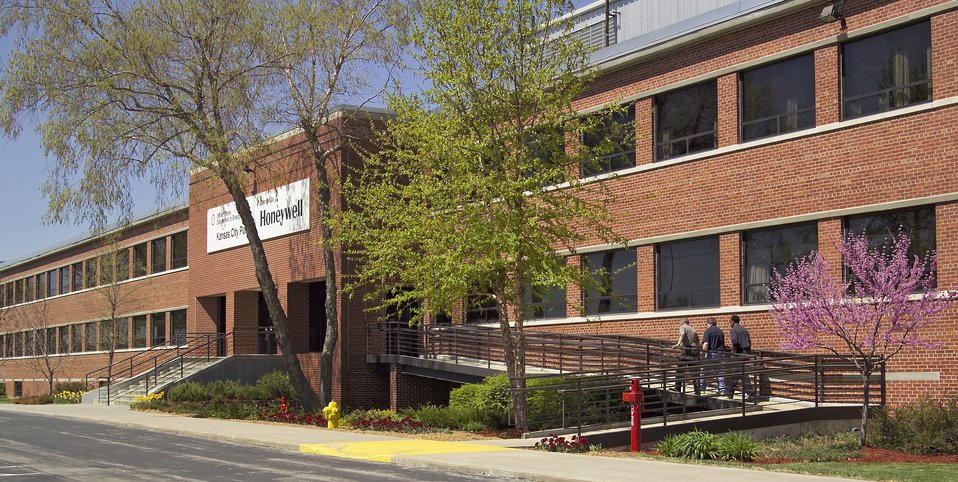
Front entrance of Kansas City Plant, November 2011.